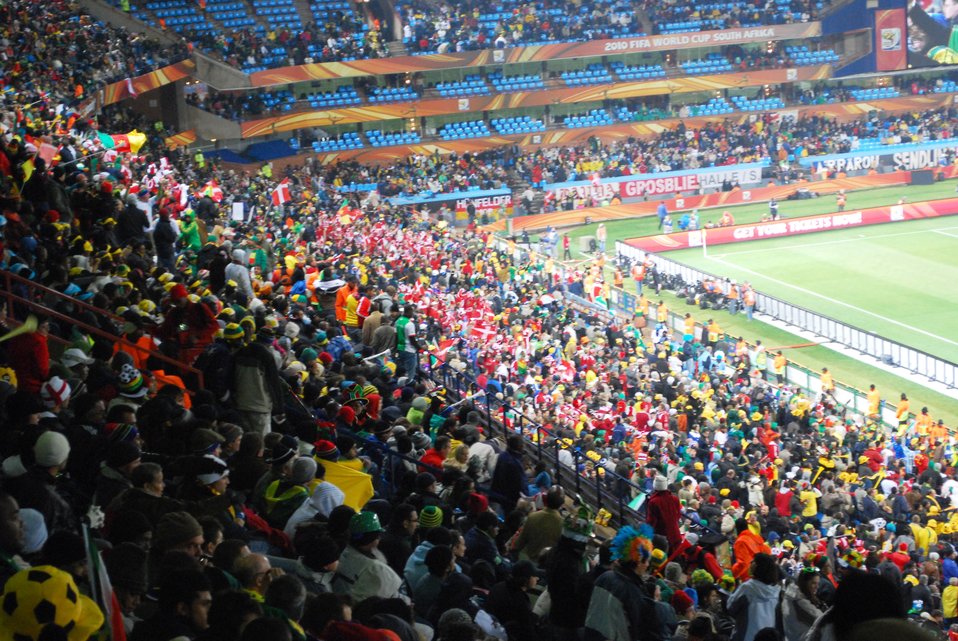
Fans Cheer at the Denmark vs. Cameroon World Cup Game

Fans cheer as they watch Denmark play Cameroon in a World Cup match at Loftus Versfeld Stadium in Pretoria, South Africa, on June 19, 2010.